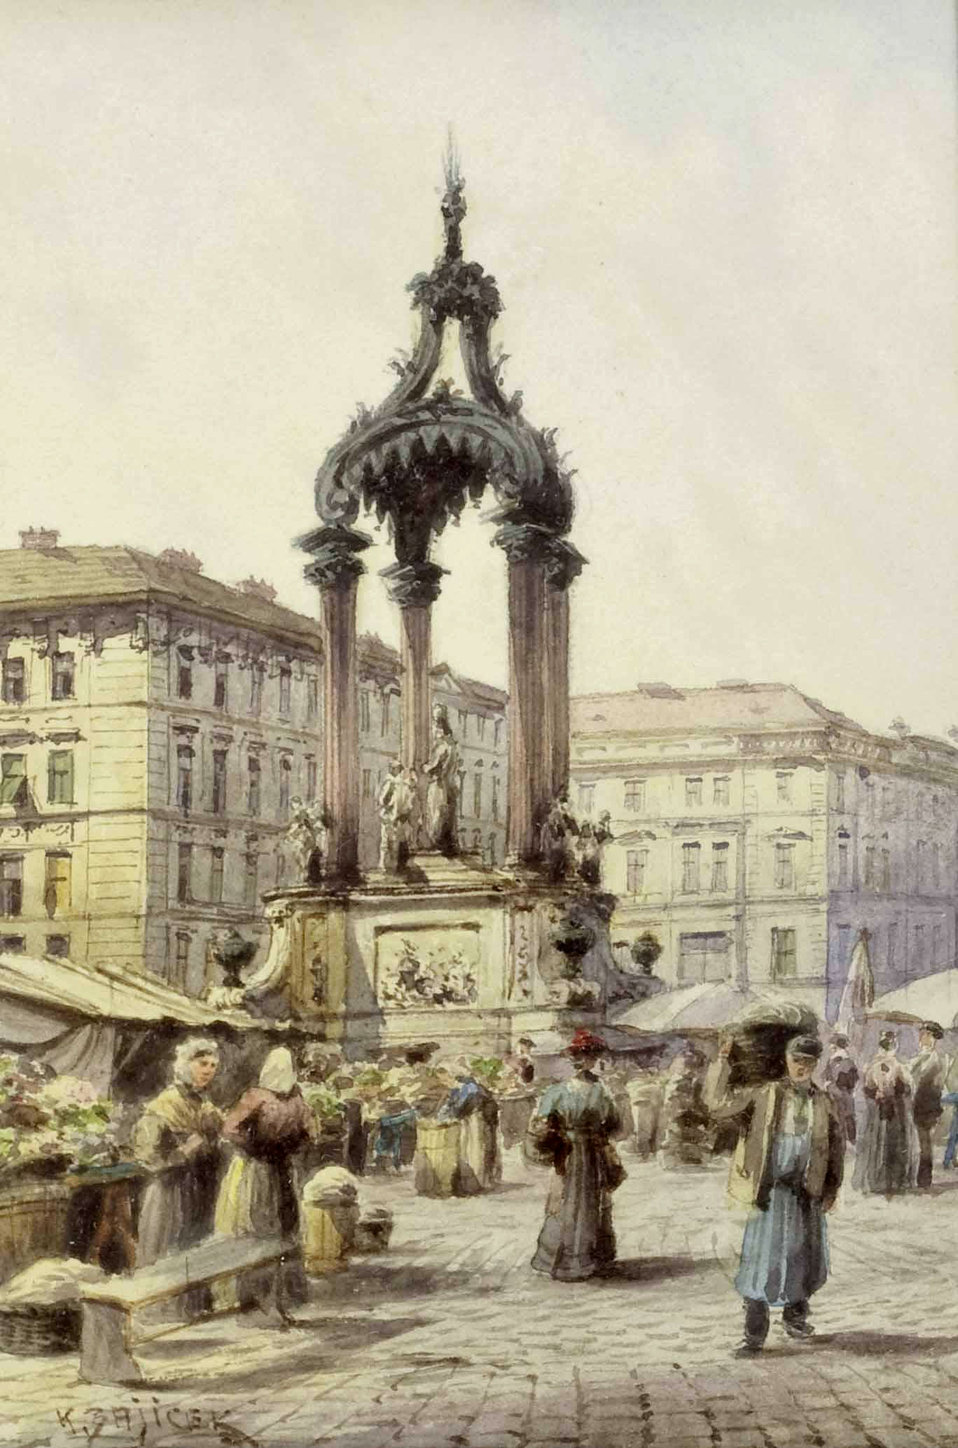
'Reges Treiben am Hohen Markt in Wien' unten links signiert: K. Zajicek, Aquarell auf Papier, Bildausschnitt ca. 18 x 13 cm